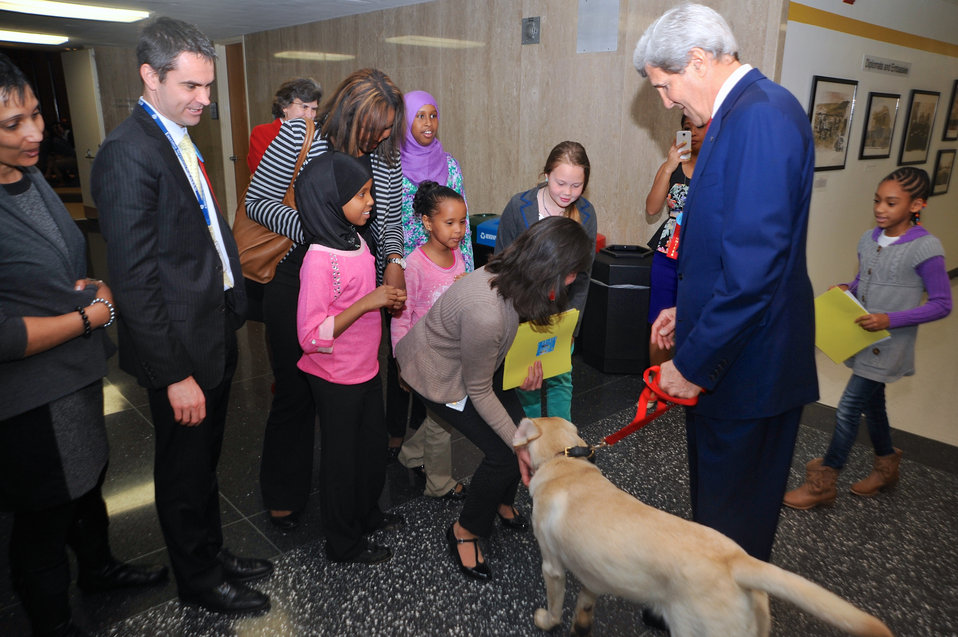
Secretary Kerry and His Dog, Ben, Greet State Department Employees and Their Relatives

U.S. Secretary of State John Kerry and his dog, Ben, greet employees and their relatives at the U.S. Department of State's annual Take Your Child to Work Day Event in Washington, D.C., on April 24, 2014.